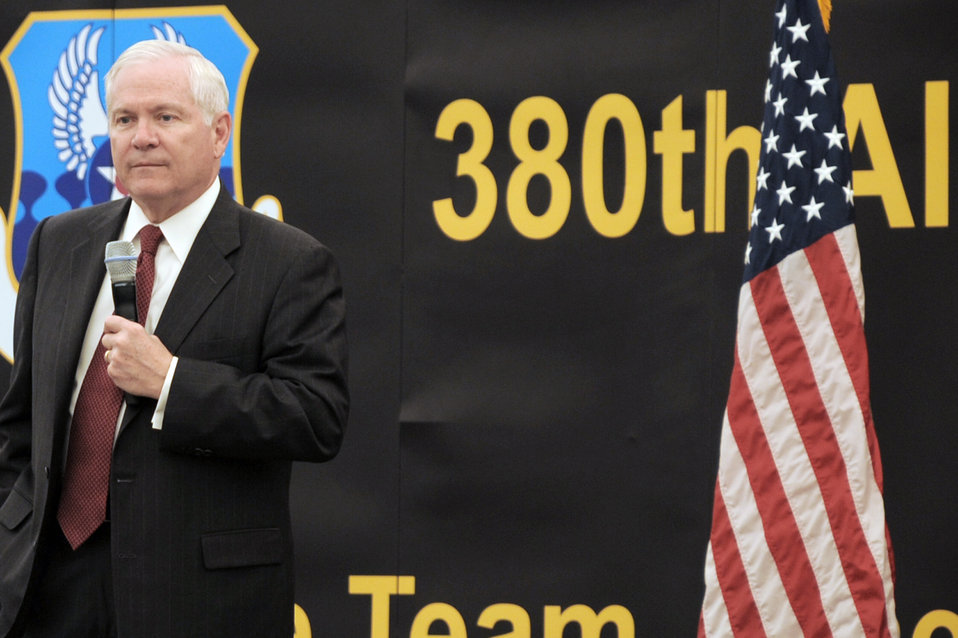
Defense secretary discusses Iraq, Afghanistan with deployed troops

Defense Secretary Robert M. Gates addresses the men and women of the 380th Air Expeditionary Wing March 11, 2010, at an air base in Southwest Asia. During the town hall meeting, Secretary Gates gave some brief comments, answered questions from the deployed service members, and presented each in attendance with a coin.